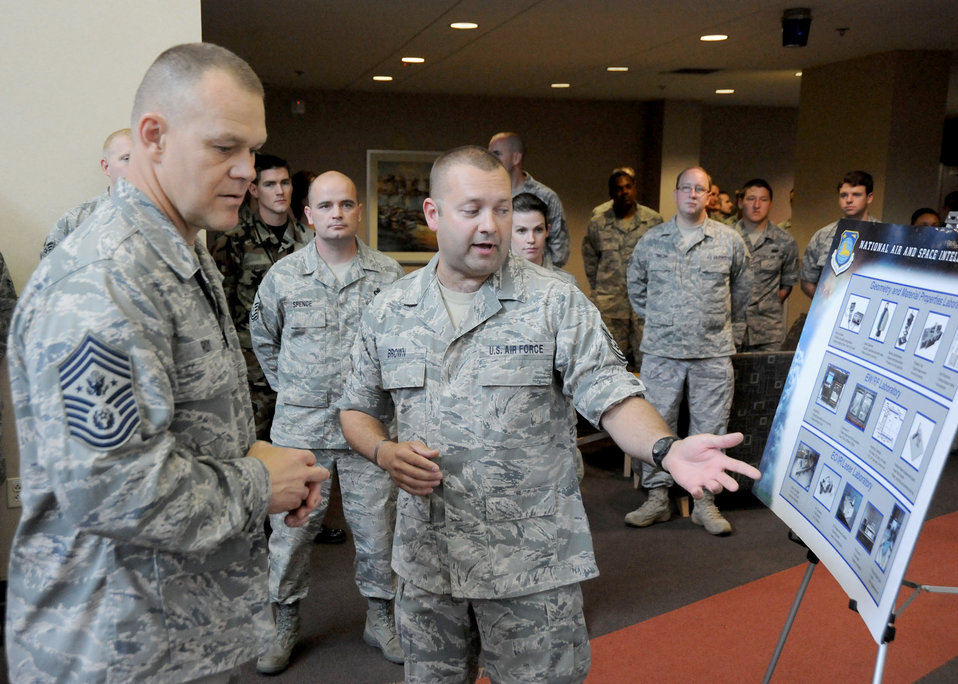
Air Force's top enlisted leader visits NASIC Airmen

Chief Master Sgt. of the Air Force James A. Roy discusses foreign material exploitation with Tech. Sgt. Douglas Brown during his tour of the National Air and Space Intelligence Center June 11, 1020, at Wright-Patterson Air Force Base, Ohio.